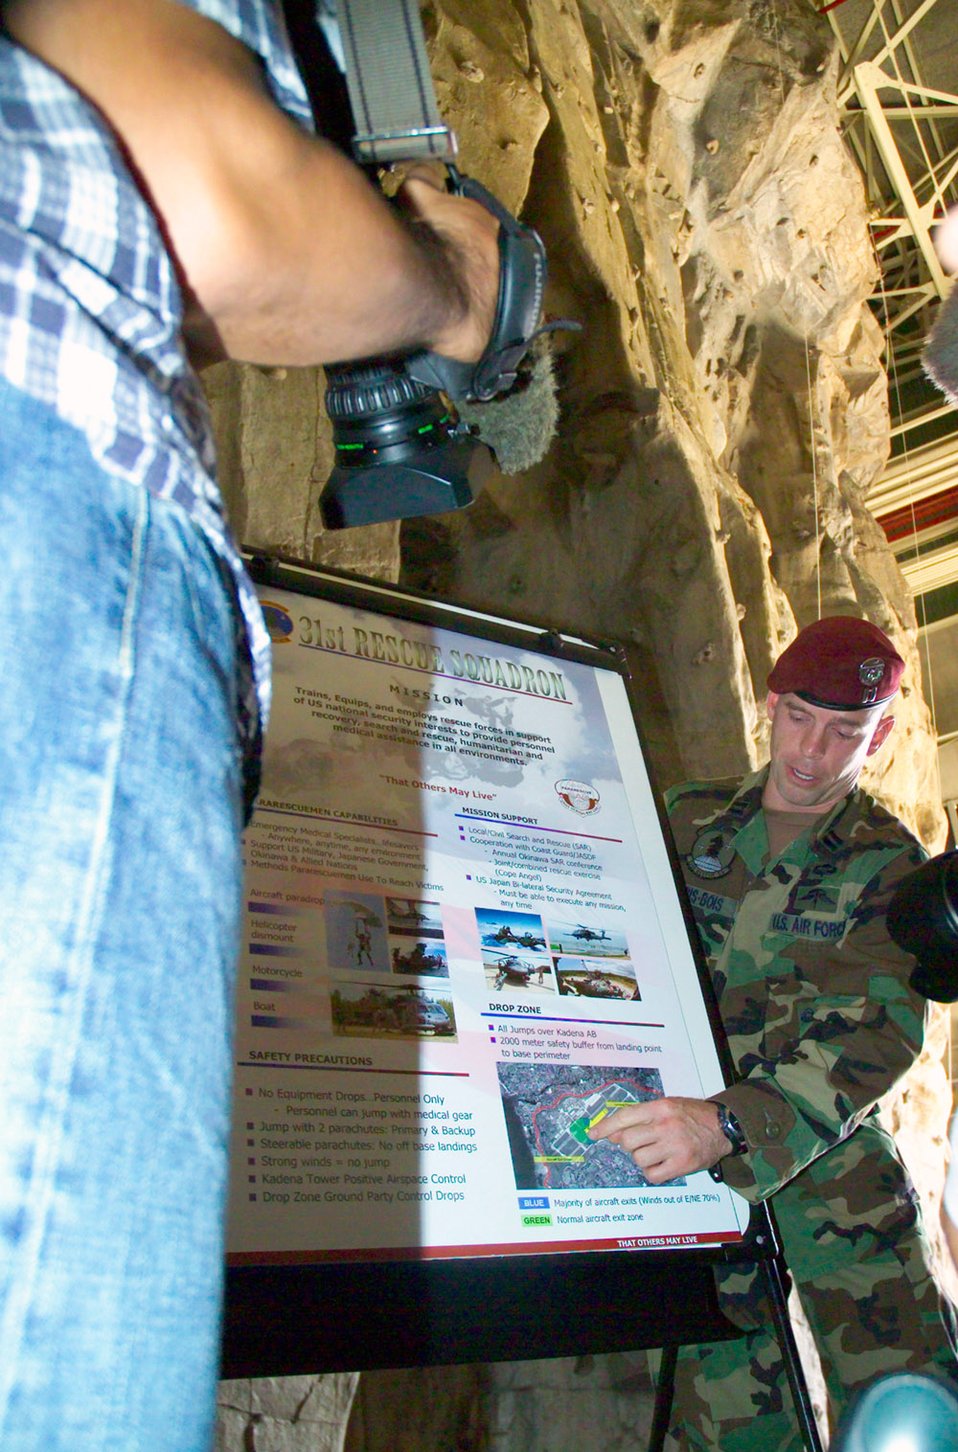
Proficiency paradrop

A member of the 31st Rescue Squadron explains the capabilities of pararescuemen to members of the Japanese media before a proficiency paradrop Oct. 19 at Kadena Air Base, Japan. More than 20 media members attended the briefing about the airborne operation and observed the drop.